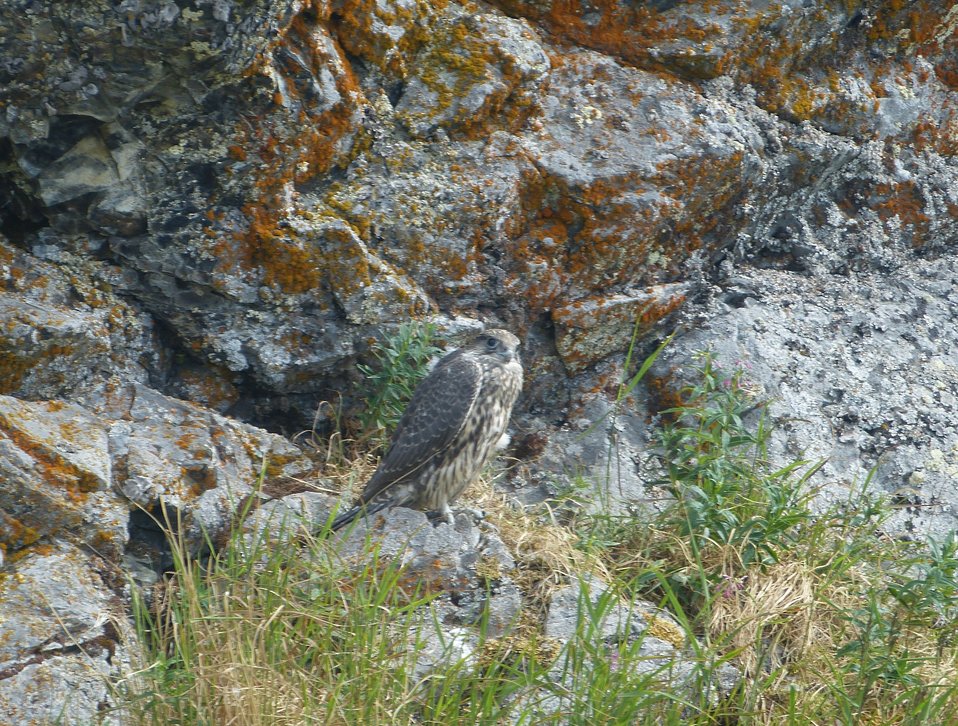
Gyrfalcon fledgling, Kilbuck Mountains, Yukon Delta National Wildlife Refuge

Photo by: Kristine Sowl,
USFWS, Yukon Delta NWR, July 10, 2013